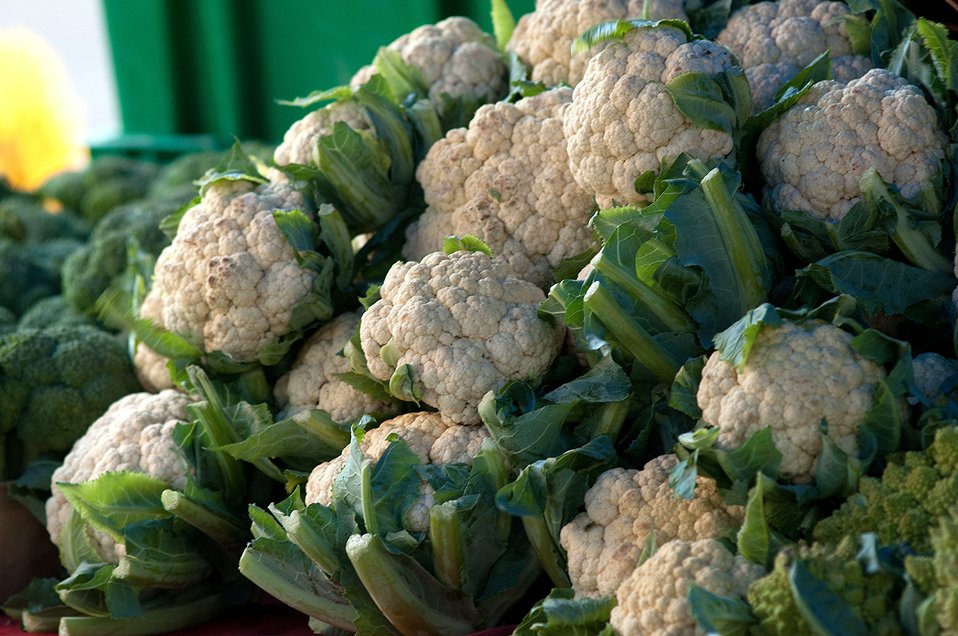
Worden Farm (www.wordenfarm.com) fresh picked organic cauliflower are ready for sale at the Saturday Morning Market, in St. Petersburg, FL, on April 14, 2012. Worden Farm is a family farm that provides certified organic produce to Southwest Florida through community supported agriculture (CSA) membership programs and retail sale at several farmer’s (community) markets. Chris Worden, Ph.D. and Eva Worden, Ph.D. founded and operates the farm that employs more than 20 people. Growing certified organic crops in the coastal sandy soil has required them to develop innovative farming techniques which help the farm as well as assist the studies of universities and farm industry. There are several Worden Farm apprenticeships that provide hands-on training in all aspects of the farm, to include direct marketing at the Saturday Morning Market, or other market sites. The farm also holds culinary and gardening workshops, and other interactive educational events. One of their organic certifications is from the U.S. Department of Agriculture (USDA) and they have partnered with the USDA Natural Resources Conservation Service (NRCS) for soil conserving windbreaks and long tunnel structures to nurture seedlings and extend the growing season.